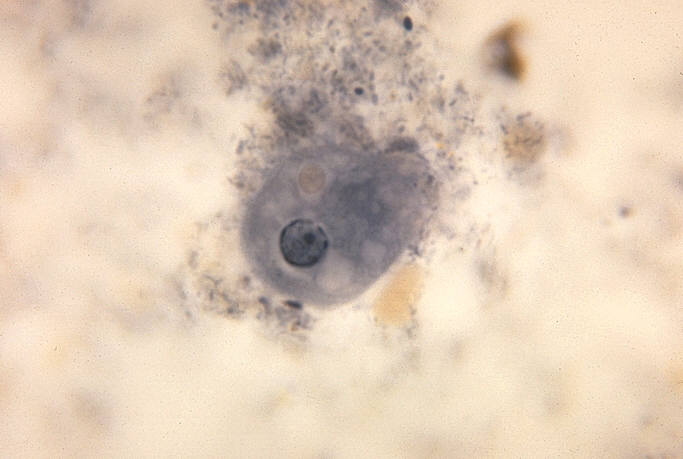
Entamoeba coli trophozoite. Parasite, ameba.